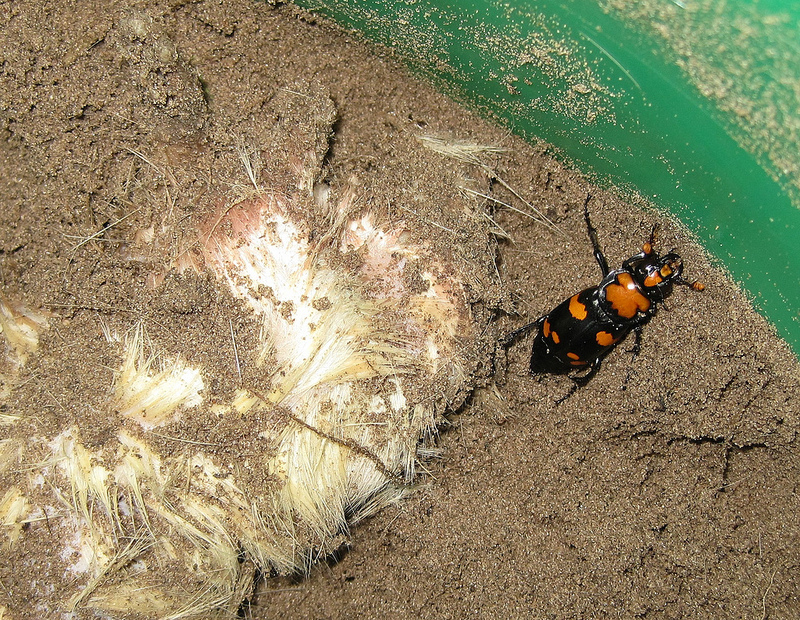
American Burying Beetle in Bait Bucket

An American burying beetle captured near Burwell, Nebraska.

Location: Price Ranch, near Burwell, Nebraska

Credit: Lindsay Vivian / USFWS

Photo Contest Entry #37